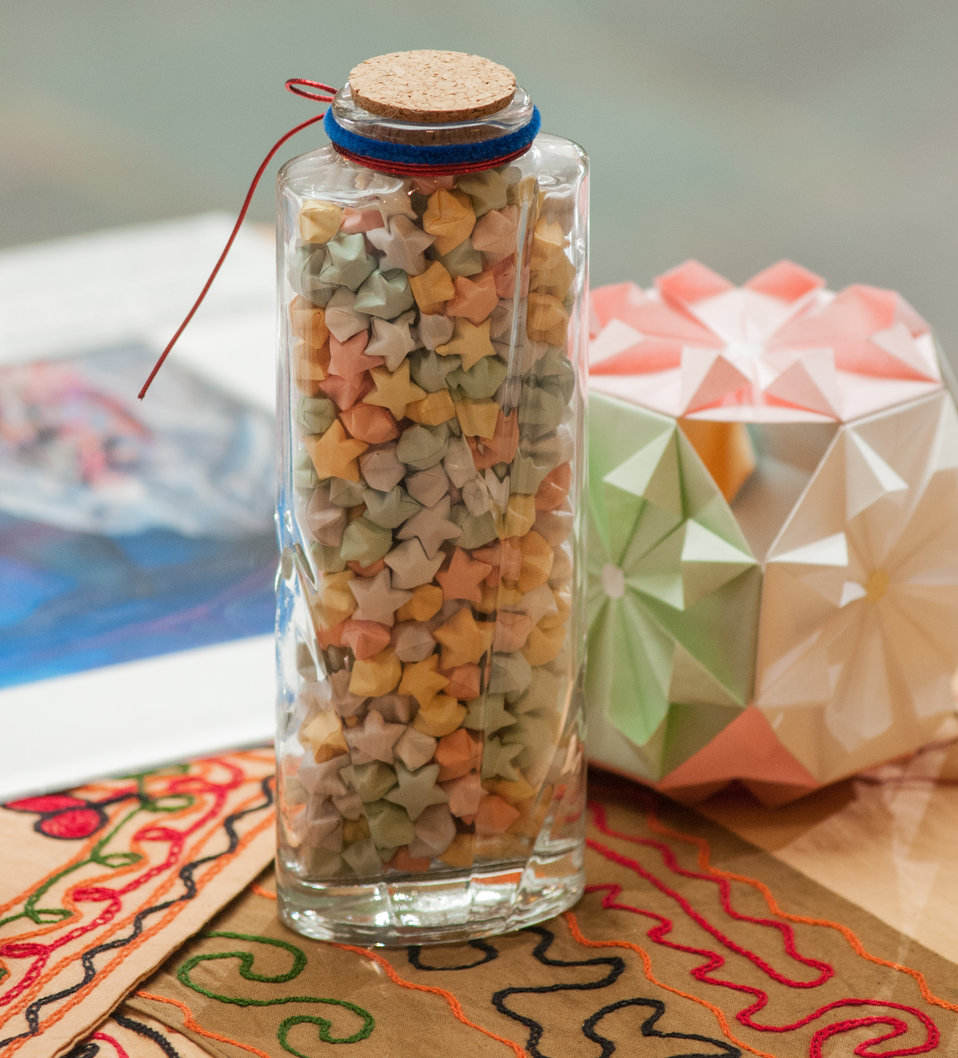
Various forms of Asian arts and crafts are displayed, during the U.S. Department of Agriculture (USDA) Asian Pacific American Heritage Month Observance program, at the USDA headquarters, Whitten Building patio, in Washington, D.C., on Thursday, May 23, 2013. This year’s theme is “Building leadership; Embracing the Cultural Values and Inclusions.”